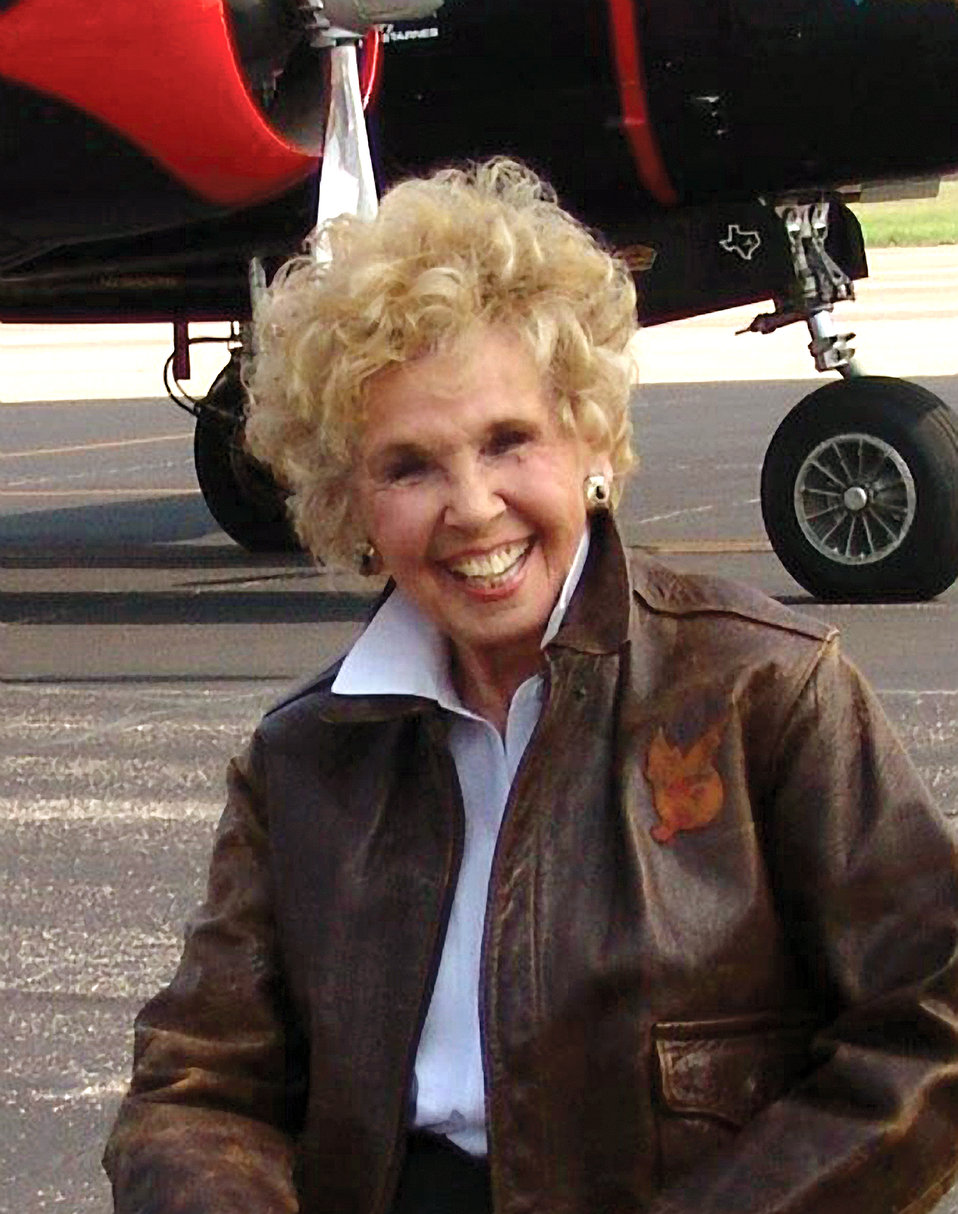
WASP recalls her World War II experiences

Deanie Parrish sits by her old aircraft.